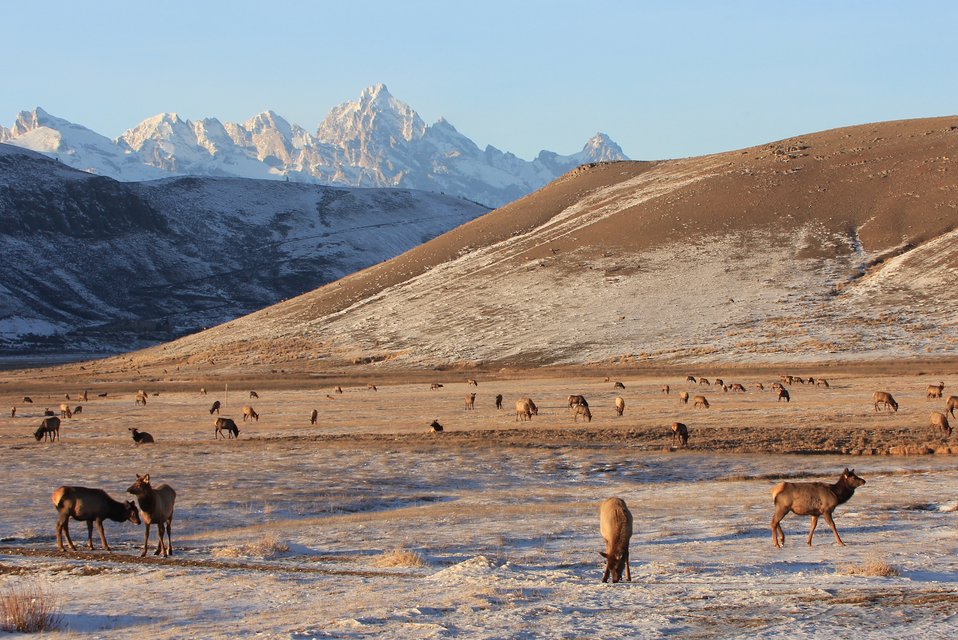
All is Calm

The late afternoon sunlight casts a lovely glow on a group of wintering elk.

Credit: USFWS / Ann Hough, National Elk Refuge volunteer